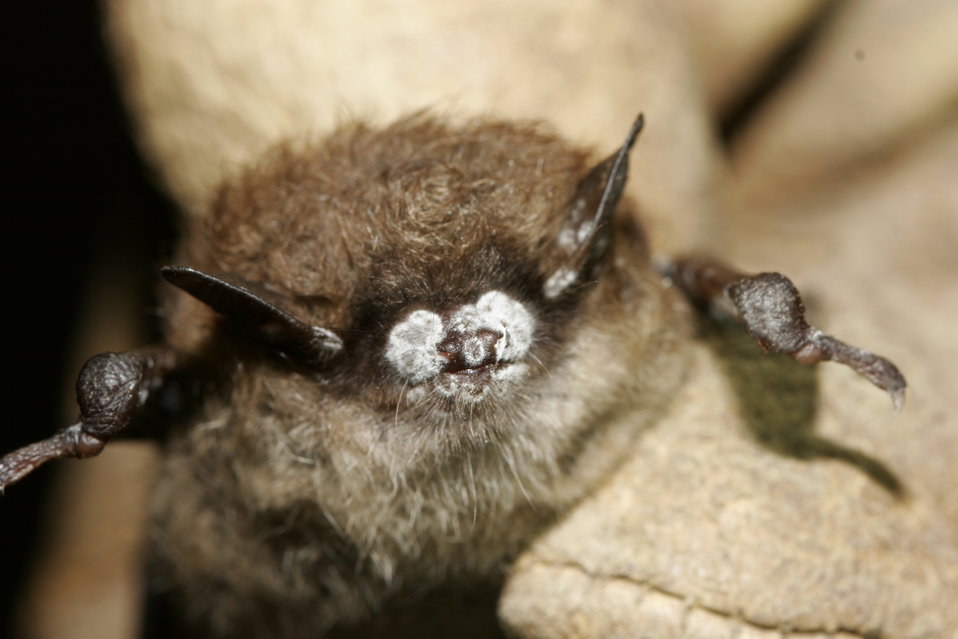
Little brown bat; close-up of nose with fungus, New York, Oct. 2008.

Credit: Photo courtesy Ryan von Linden/New York Department of Environmental Conservation

Image size: 3504p (49 in.) W x2336p (32 in.) H, 72 ppi, 2.2 MB